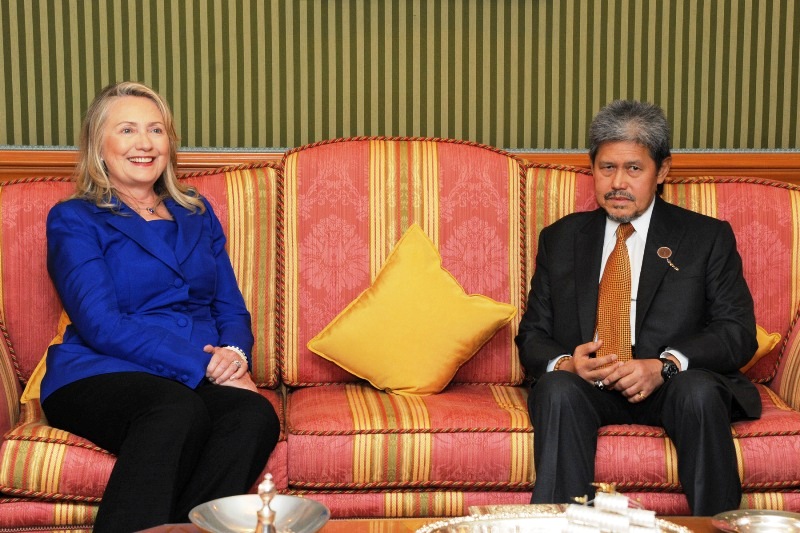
Secretary Clinton Meets With Brunei's Foreign Minister Prince Mohamed Bolkiah

U.S. Secretary of State Hillary Rodham Clinton meets with Brunei's Foreign Minister Prince Mohamed Bolkiah in Bandar Seri Begawan, Brunei, September 7, 2012.